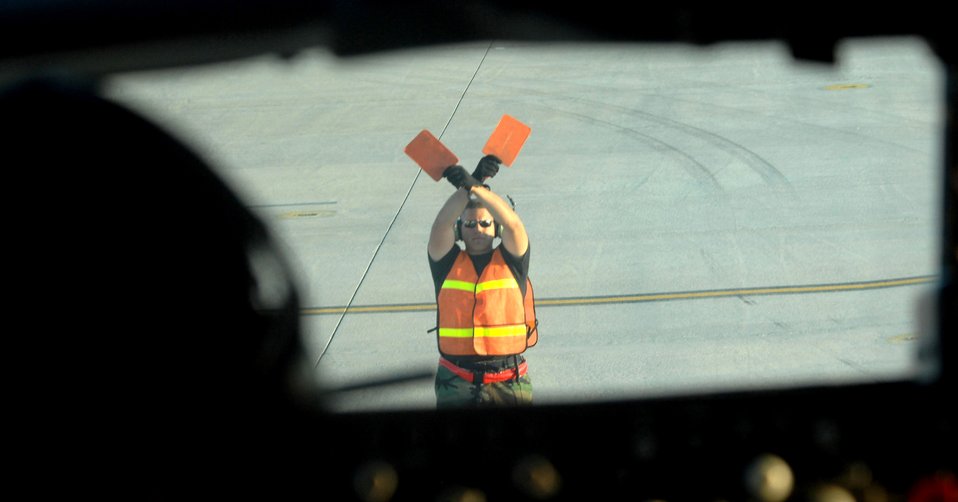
Revving up for Red Flag

Tech. Sgt. Jon Chasse marshals in a KC-135 Stratotanker Aug. 28 during the Red Flag 07-3 exercise at Nellis Air Force Base, Nev. Red Flag tests aircrew war-fighting skills in realistic combat situations. The aircraft fly missions during the day and night to the nearby Nevada Test and Training Range to simulate an air war. Sergeant Chasse is a crew chief assigned to the 92nd Fighter Wing at Fairchild AFB, Wash.